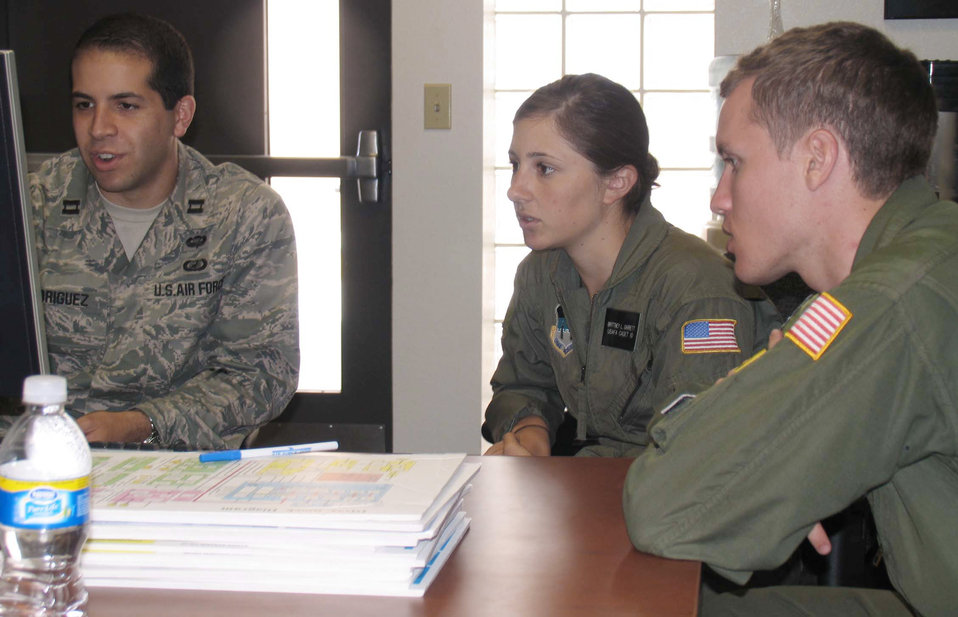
Cadets learn by doing during summer program at AFOTEC

Capt. James Rodriguez works with Cadets First Class Brittney Garrett and Mark Price as they analyze questionnaire and reliability data for the Department of Defense National Airspace System during the U.S. Air Force Academy's Cadet Summer Research Program. During the five-week program, cadets gained hands-on exposure to operational testing processes, products and experiences. Captain Rodriguez is from the Air Force Operational Test and Evaluation Center's Detachment 3 at Kirtland Air Force Base, N.M.